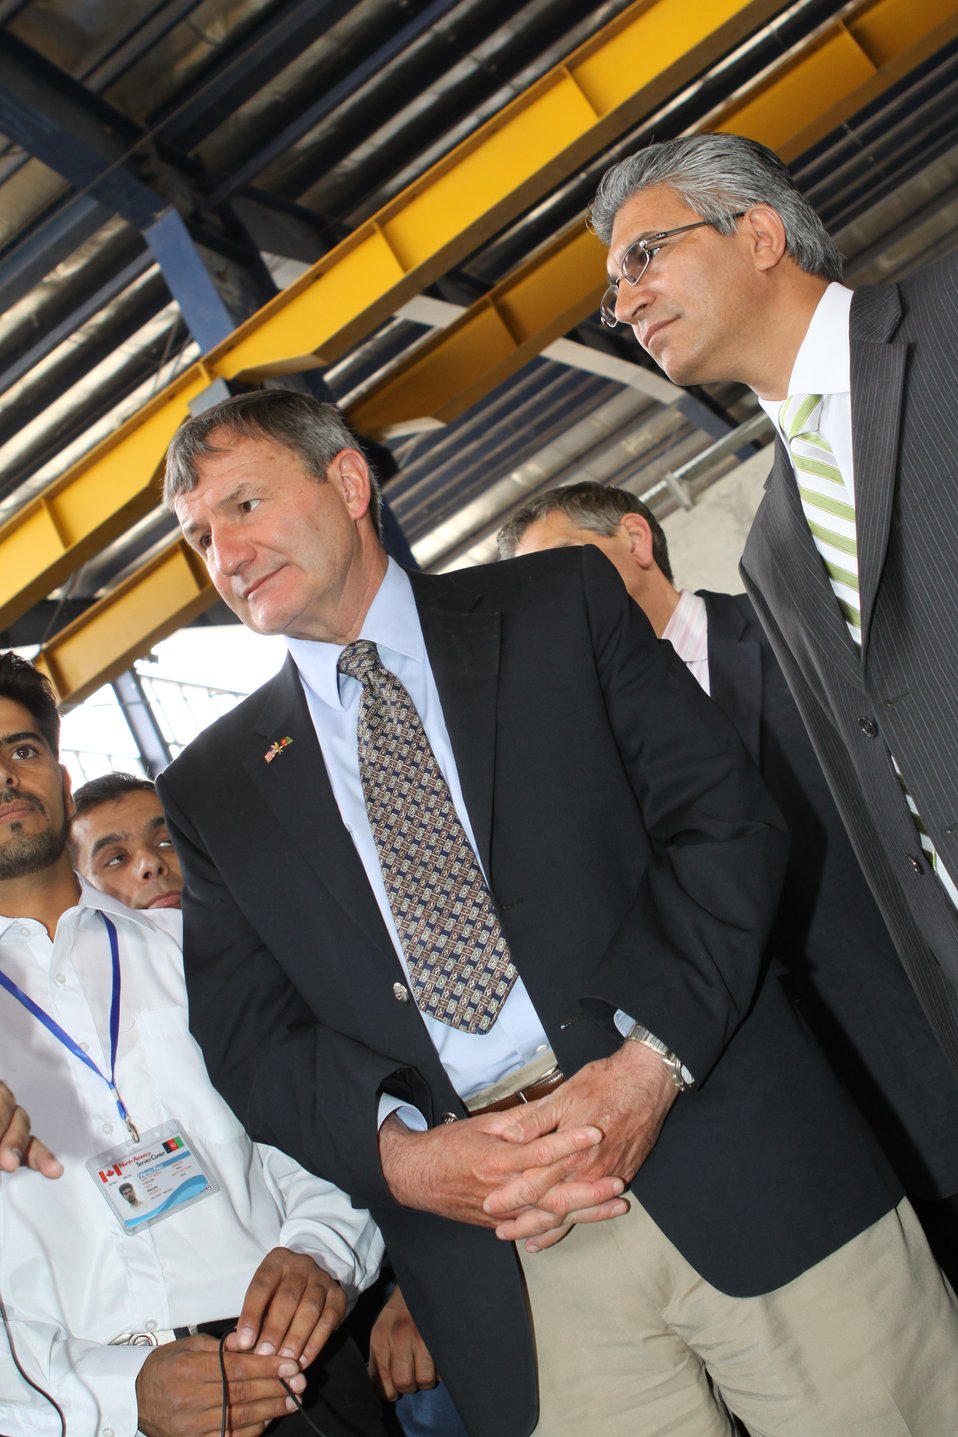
100525 Hirat Marble Conference 444